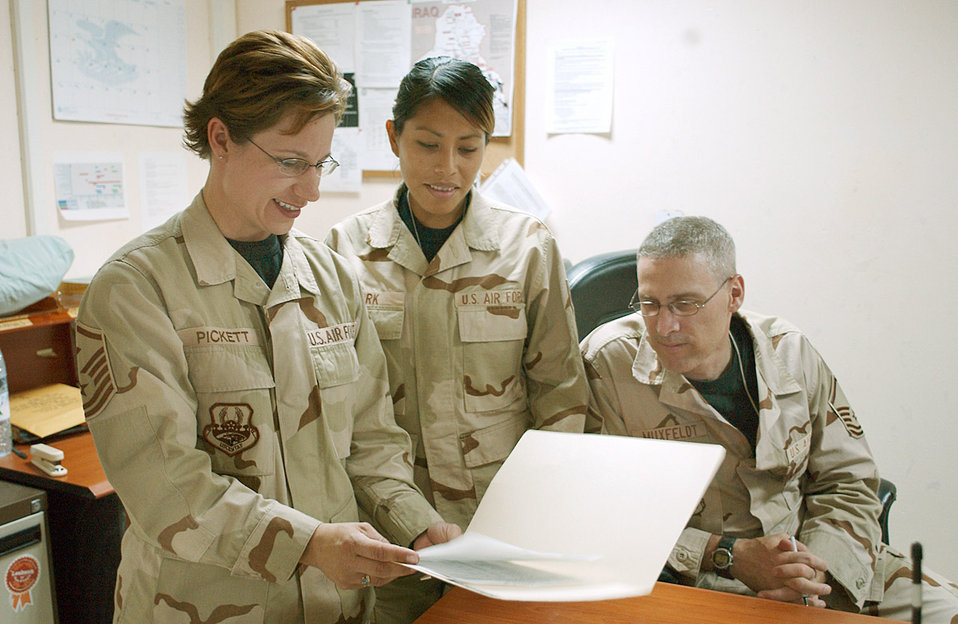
Supporting those outside Balad

BALAD AIR BASE, Iraq -- Master Sgt. Hayden Pickett (left), 732nd Expeditionary Security Forces Squadron first sergeant, reviews a personnel record with Staff Sgt. Jenna Marks (middle) and Master Sgt. Monte Muxfeldt, both from the 732nd Expeditionary Mission Support Group.